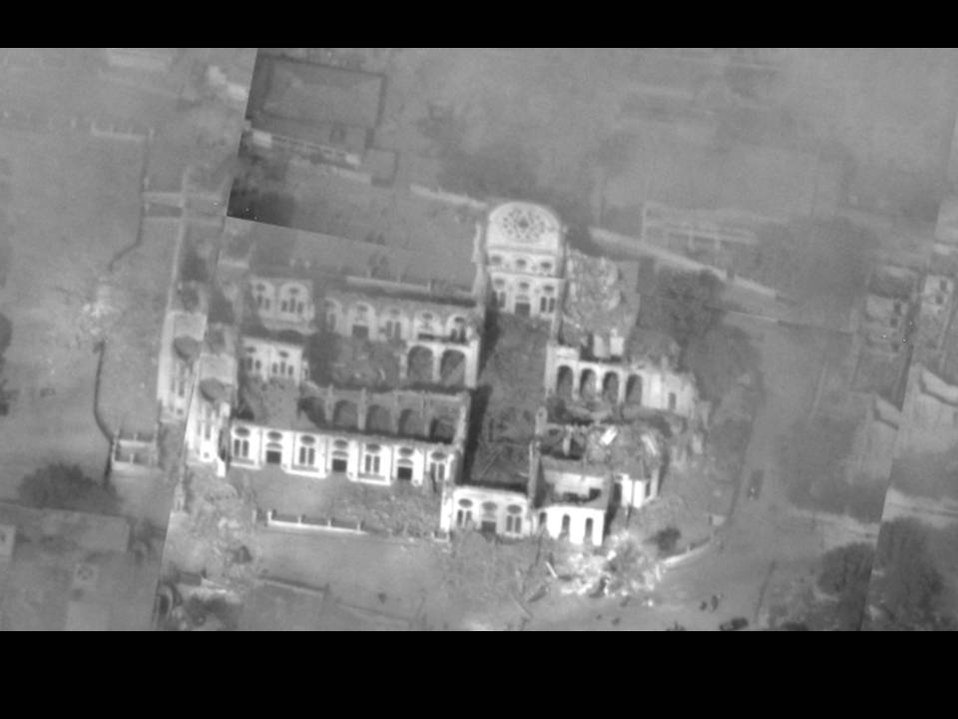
Global Hawk over Haiti

An aerial view of the damaged National Cathedral in Haiti from an Air Force Global Hawk unmanned aircraft Jan. 14. Aerial images are providing planners valuable situation awareness as they coordinate U.S. military support to the Haiti relief effort.